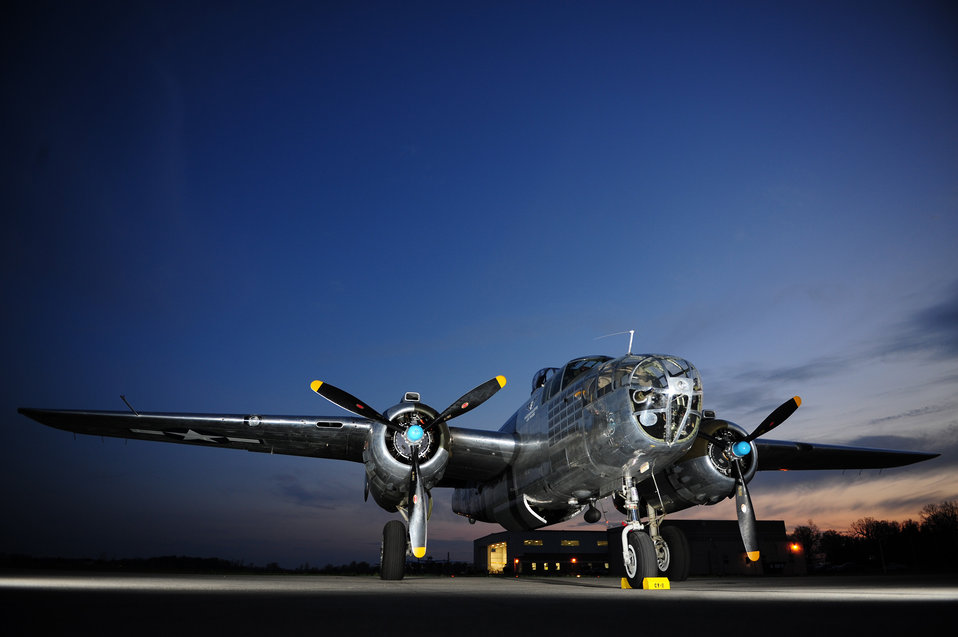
68th Doolittle Raiders Reunion

The